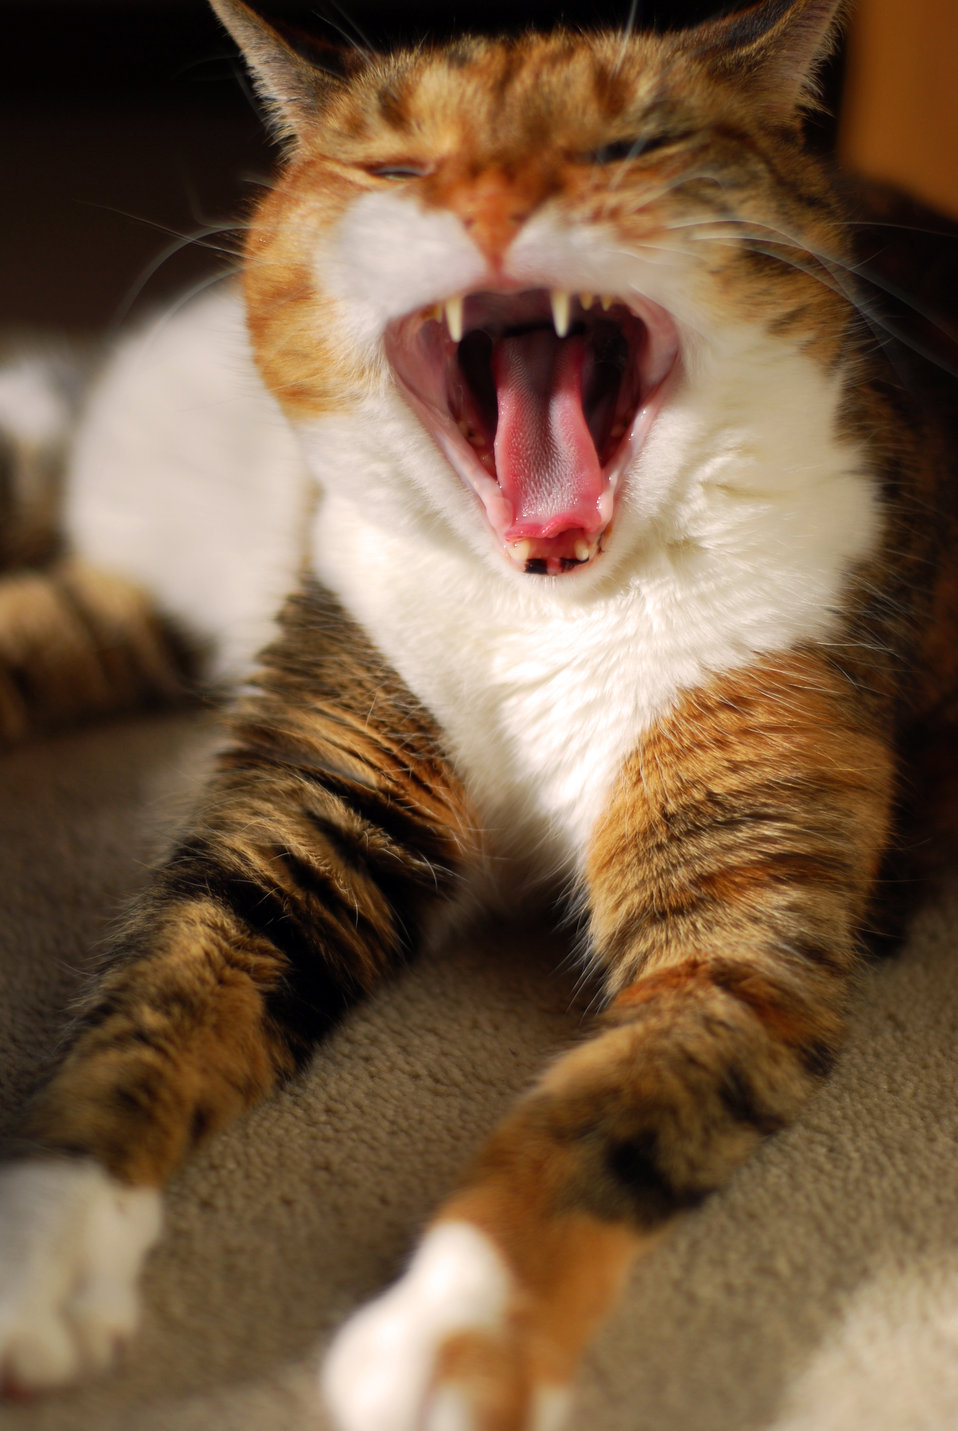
A 13 year old Tortoiseshell cat yawns.